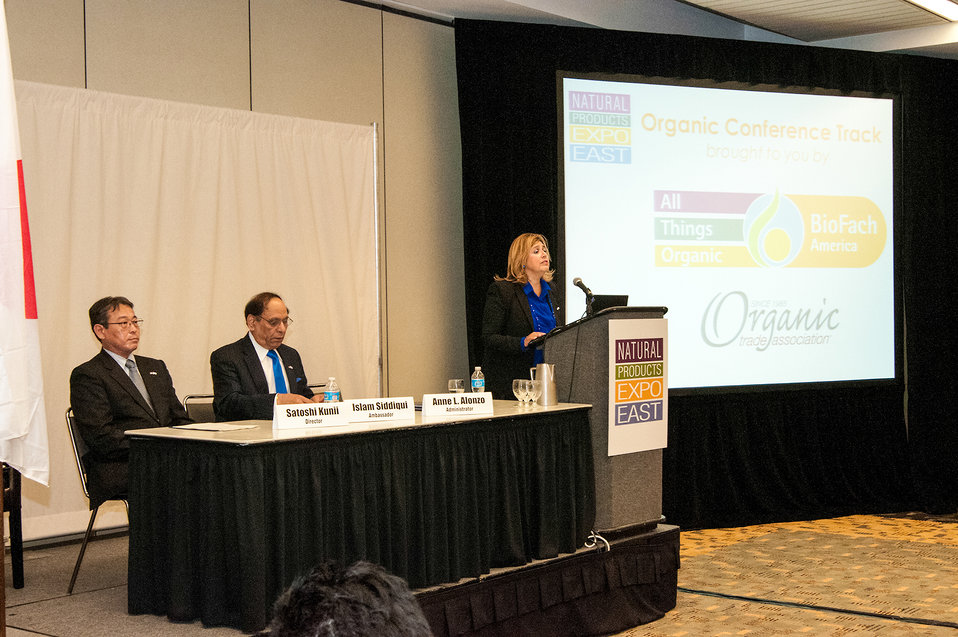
U.S. Department of Agriculture (USDA) Agricultural Marketing Service (AMS) Administrator Anne Alonzo announces an important trade agreement with Japan. USDA AMS Administrator Anne Alonzo, Japan’s Forestry and Fishery Ministry of Agriculture Division of Food Safety and Consumer Affairs Bureau Director of Labeling and Standards Satoshi Kunii, and U.S. Trade Representatives Ambassador Islam Siddiqui signed a memorandum of understanding with Japan for USDA’s National Organic Program at the Natural Products Expo East at the Natural Products Expo East conference in Baltimore, MD on Thursday, Sep. 26, 2013.